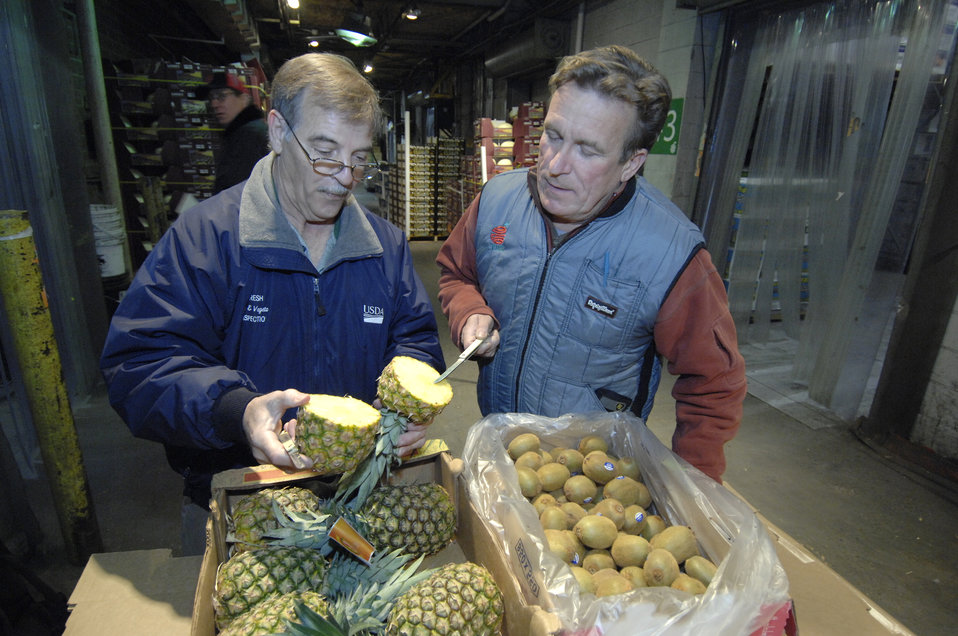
U. S. Department of Agriculture (USDA) Agricultural Marketing Service (AMS) inspectors Bill Dwyer and Bob Scholfield examine pineapple and other fresh fruits in Philadelphia, Pennsylvania at the Philadelphia Food Distribution Center on May 21, 2008.